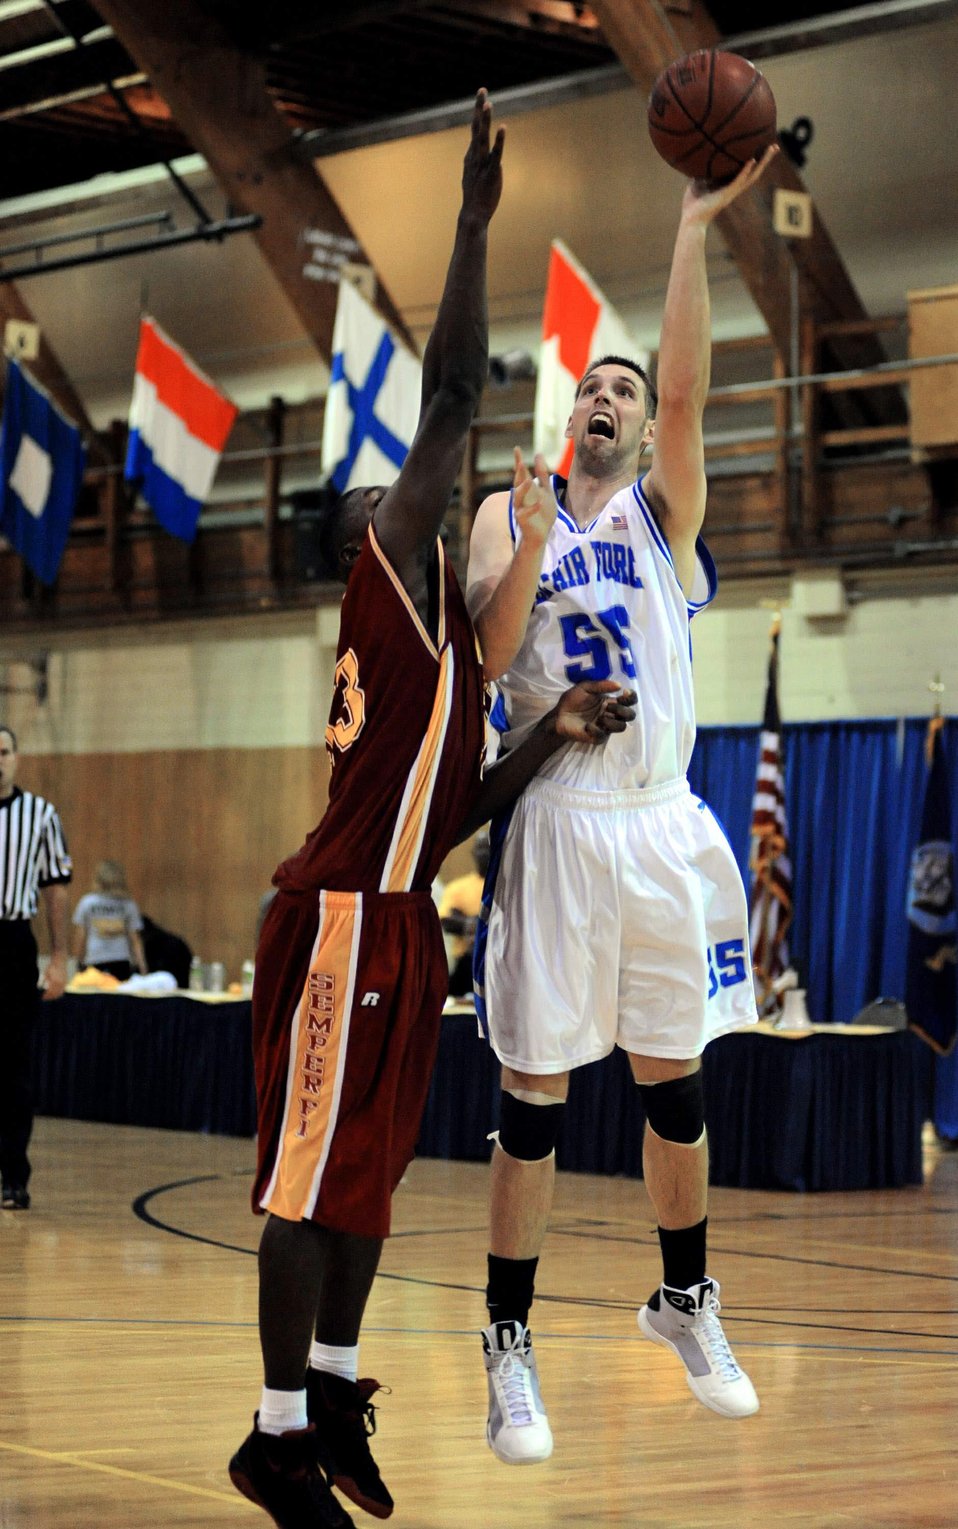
Armed Forces Basketball Championship

Second Lt. John Frye, from Schriever Air Force Base, Colo., shoots over a defender for two points during a basketball game against the Marine Corps. Frye scored seven points and had two rebounds during the 86-67 victory over the Marines in the second round of games for the Armed Forces Basketball Championship. The tournament ran from May 12 to 17 at the Naval Support Activity Mid-South in Millington, Tenn.